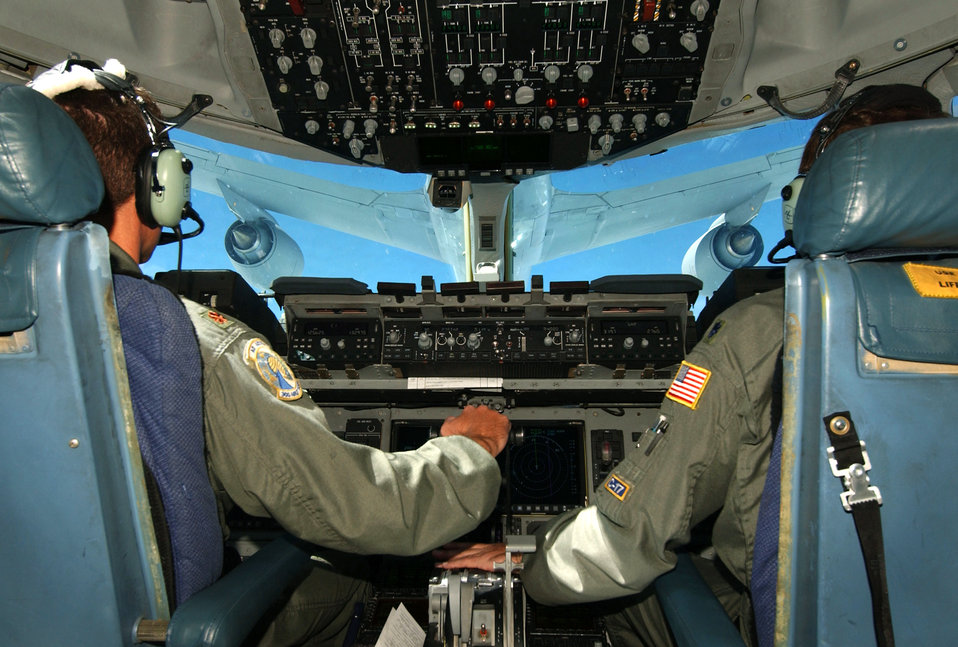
Gas-n-go

OVER THE EAST COAST -- Lt. Col. Tom Clayton and Maj. Dave Deames line up a C-17 Globemaster to refuel with a KC-135 Stratotaker from the Ohio Air National Guard’s 121st Air Refueling Wing. The aircrew is assigned to the 300th Air Lift Squadron at Charleston Air Force Base, S.C.